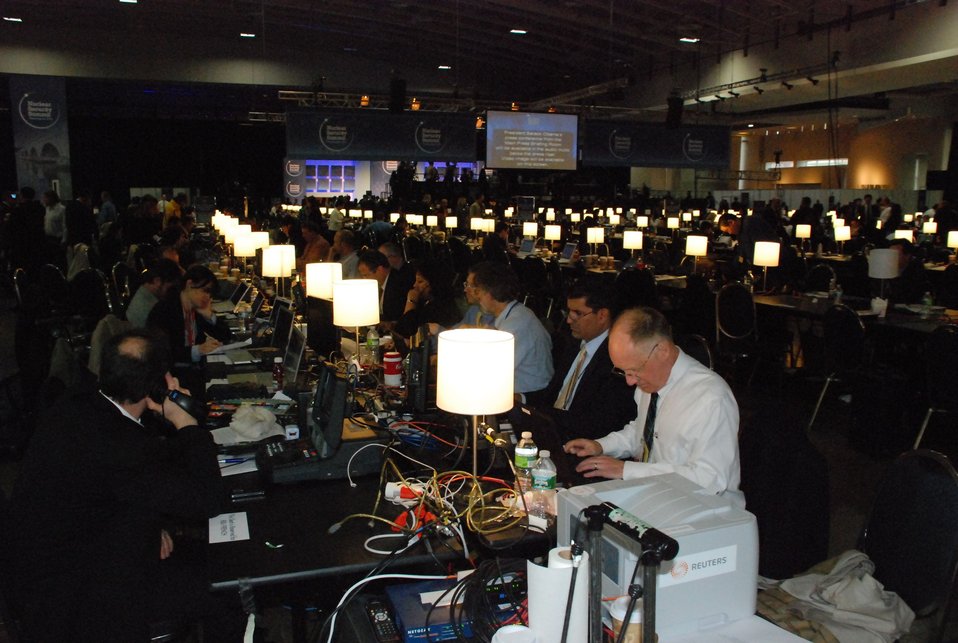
Representatives Participate in the Nuclear Summit

International representatives participate in the Nuclear Security Summit at the Ronald Reagan Building in Washington, D.C., April 13, 2010.